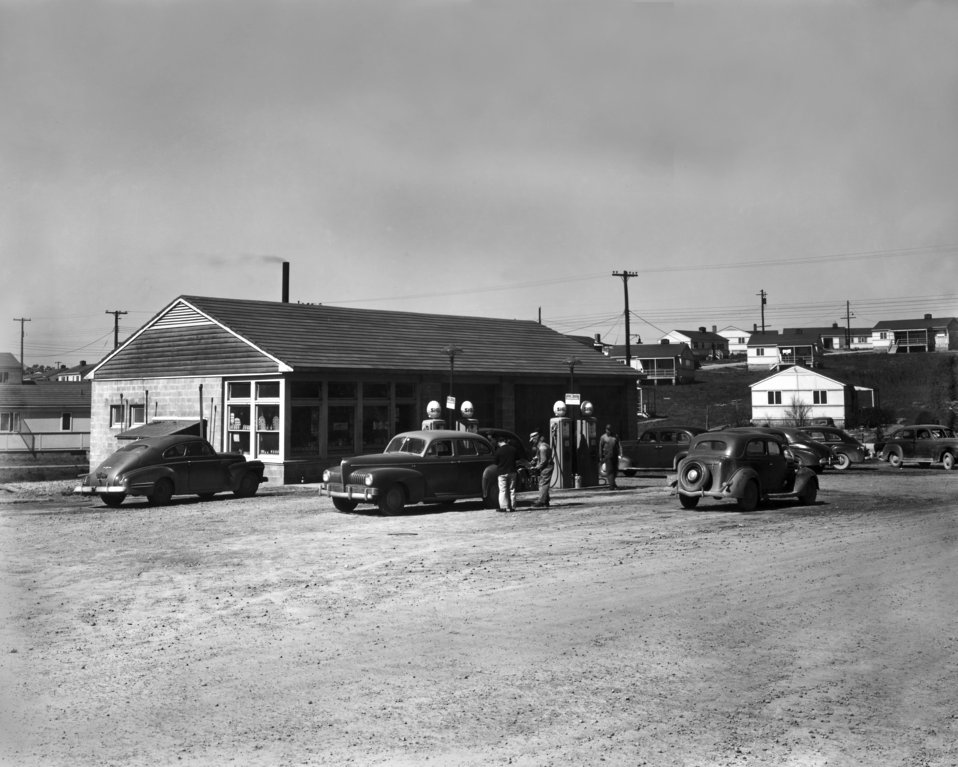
Shell Service Station Oak Ridge

S-170 DOE photo by Ed Westcott Oak Ridge Turnpike and Vermont Ave. 1944 Oak Ridge Tennessee